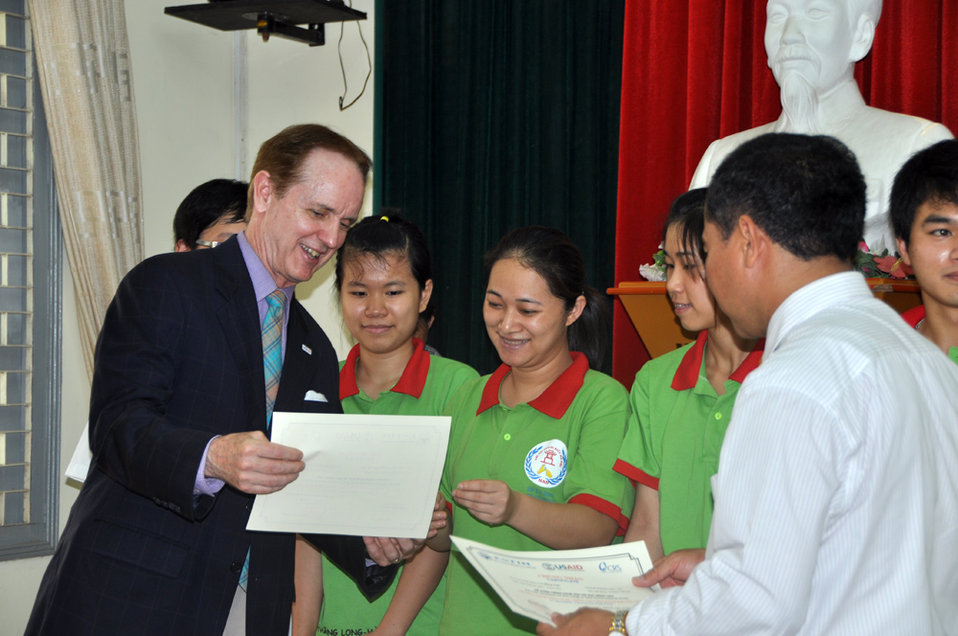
USAID Mission Director Francis Donovan participate in graduation of IT students in Hanoi on June 22, 2011.